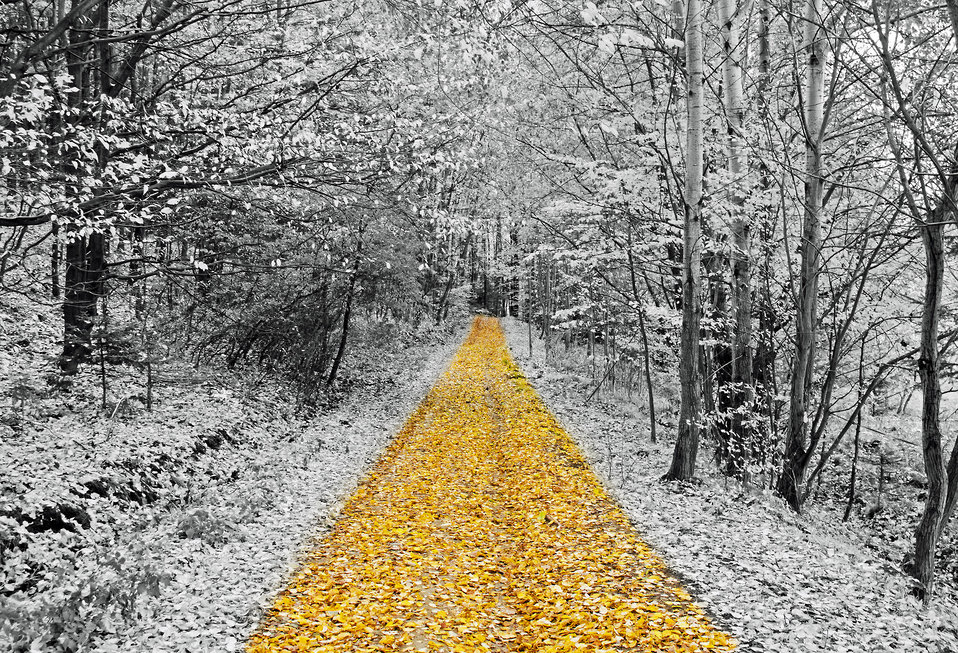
Gold footpath.